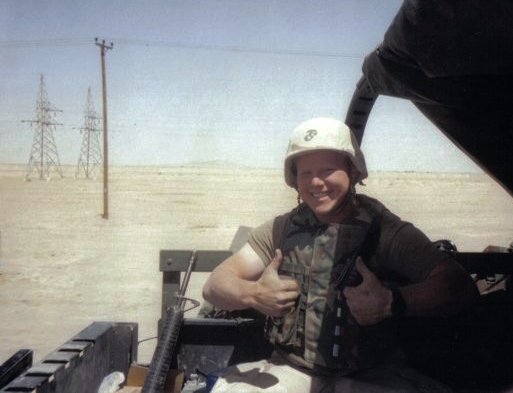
Mike Picha

Michael Picha, a Land Surveyor with the Realty Division in Region 3, was in the Marine Corps from June 1999 to July 2003. This photo was taken as they left Iraq and had just crossed the border back into Kuwait.